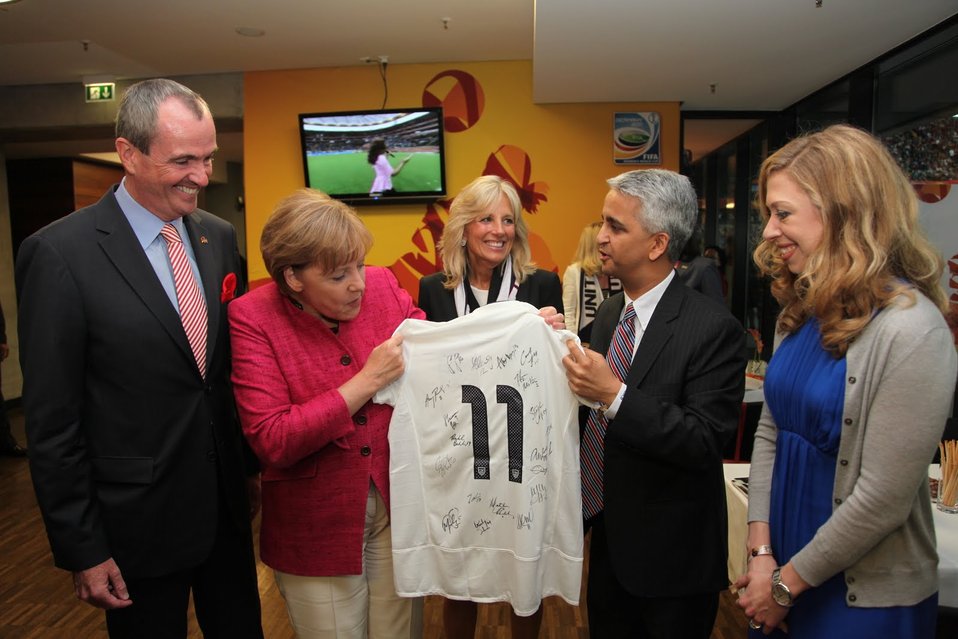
Chancellor Merkel is Presented with an Autographed U.S. Women's Jersey

Sunil Gulati, president of the United States Soccer Federation, with U.S. Ambassador to Germany Philip D. Martin and Chelsea Clinton, present a shirt with autographs of the U.S. women’s national soccer team to Chancellor of Germany Angela Merkel during the 2011 FIFA Women’s World Cup final in Frankfurt, Germany, on July 17, 2011.